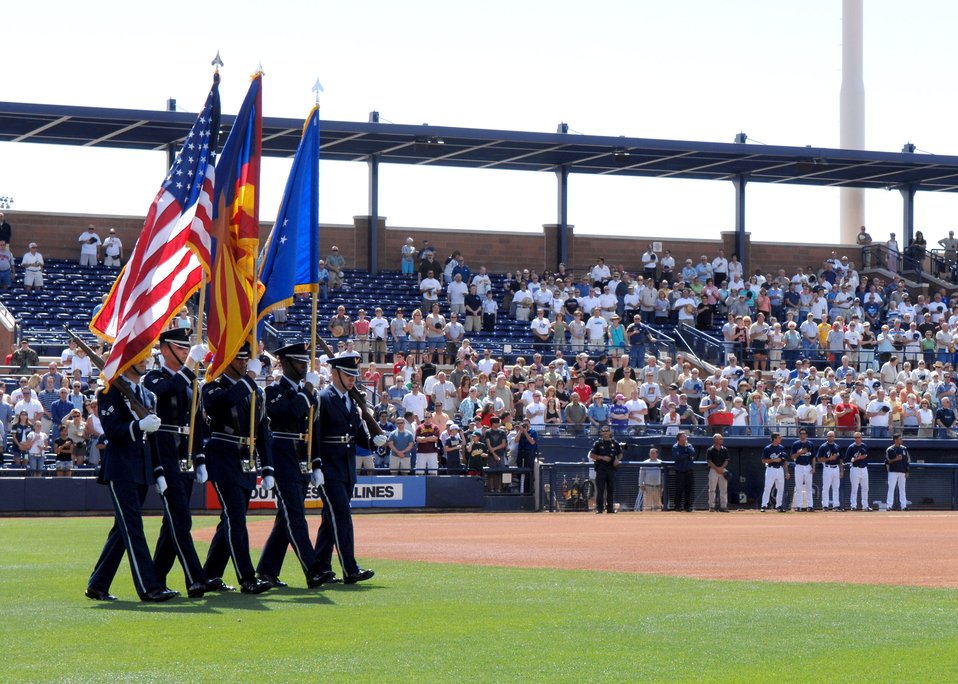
Play ball!

The Luke Air Force Base Honor Guard posts the colors before the start of a 2007 spring training baseball game between the San Diego Padres and the Milwaukee Brewers March 21. The Airmen were in attendance supporting Air Force Week in Arizona, an event that highlights the Air Force and thanks the community for its support.